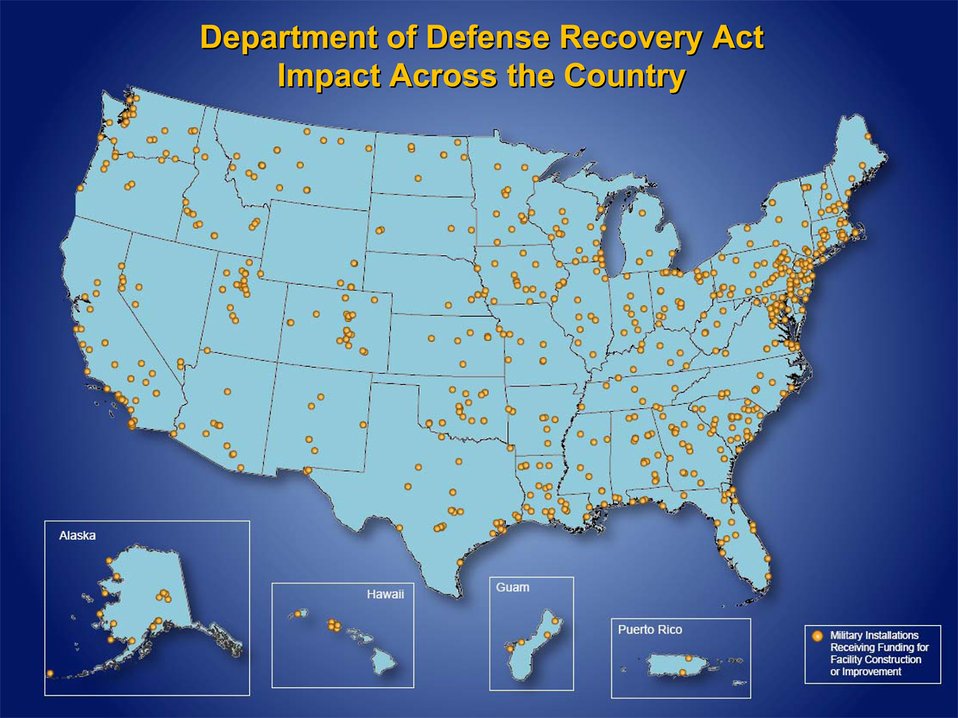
Recovery Act

DOD Recovery Act impact across the country